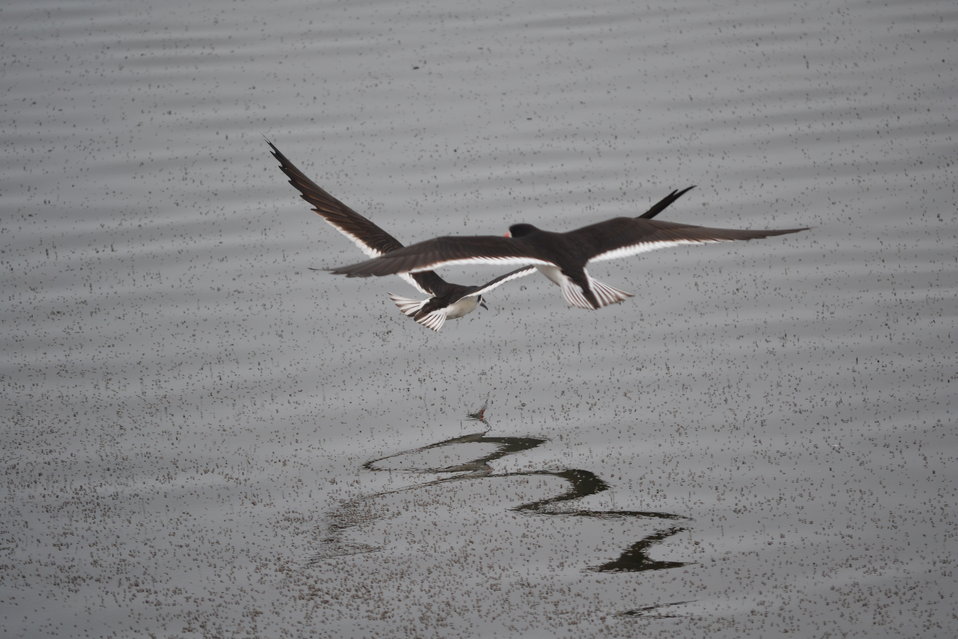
Black skimmers (Rynchops niger) gliding gracefully

The black skimmers execute haripin turns and smooth banks while foraging. Here, the brine flies are very visible above the water with them